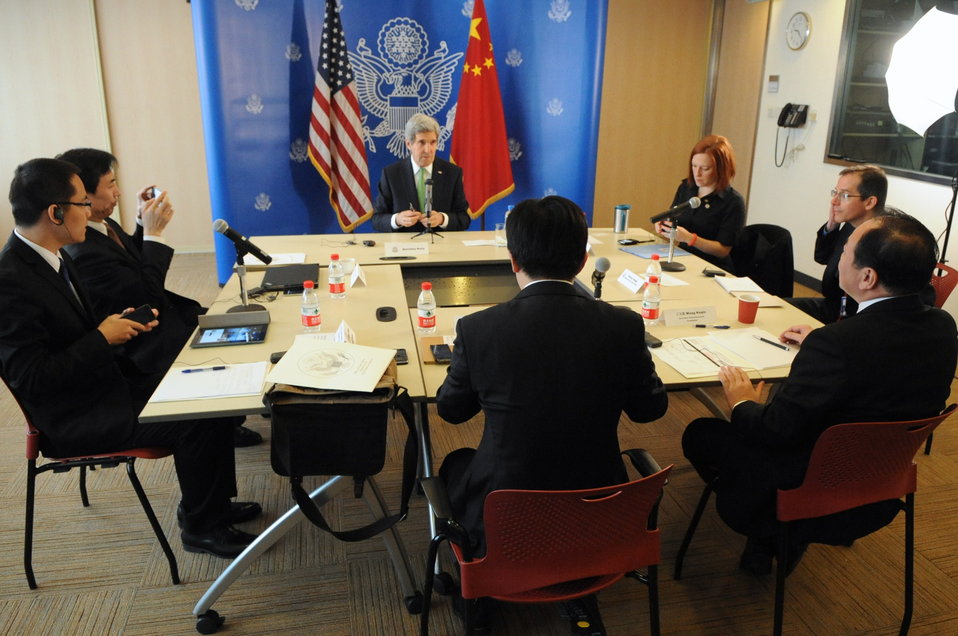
Secretary Kerry Addresses Bloggers During Meeting in China

U.S. Secretary of State John Kerry addresses a group of Chinese bloggers during a roundtable discussion about press freedom and regional issues in Beijing, China on February 15, 2014.